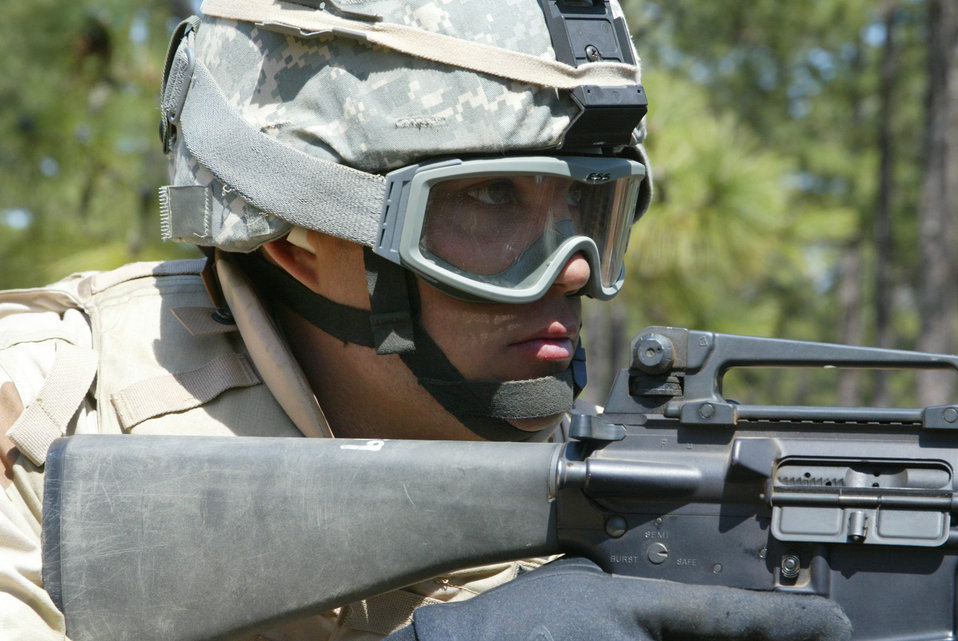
Provinicial reconstruciton team training

Capt. Kevin Tuttle provides security on a convoy. Twelve provincial reconstruction teams with Air Force, Army and Navy members are training at Fort Bragg to deploy to Afghanistan in April to relieve the Army team. Captain Tuttle is a public affairs officer with the 45th Space Wing at Patrick Air Force Base, Fla.